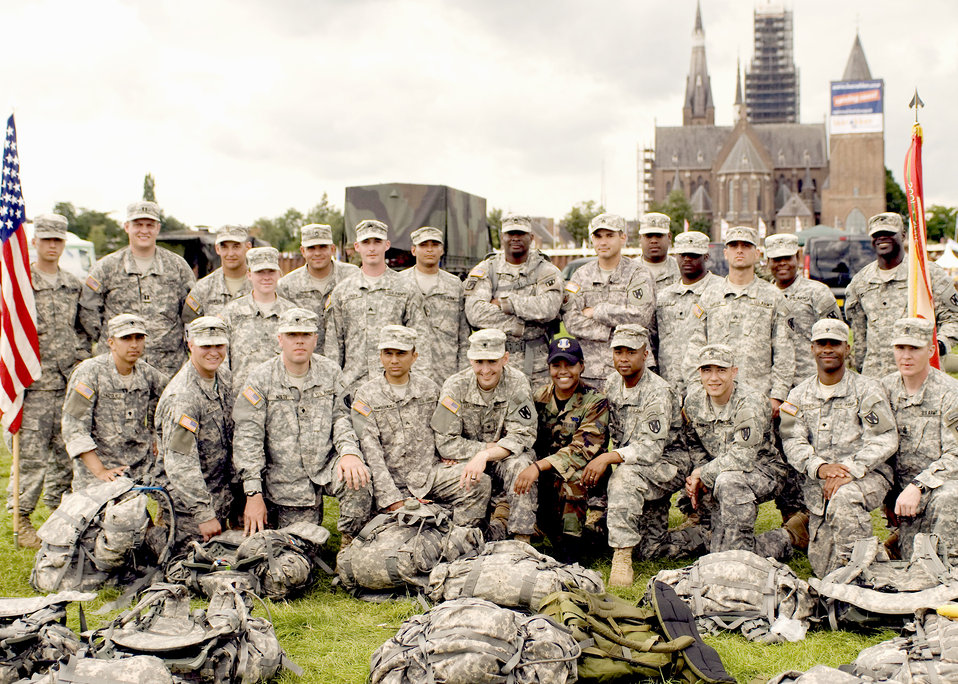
Ramstein Airman shows strength during Army 100-mile march

Senior Airman Saretta Morgan (center in battle dress uniform), an 86th Airlift Wing Legal Office paralegal, poses with her Army teammates after completing the International Four Day Marches Nijmegen July 24 in the Netherlands.